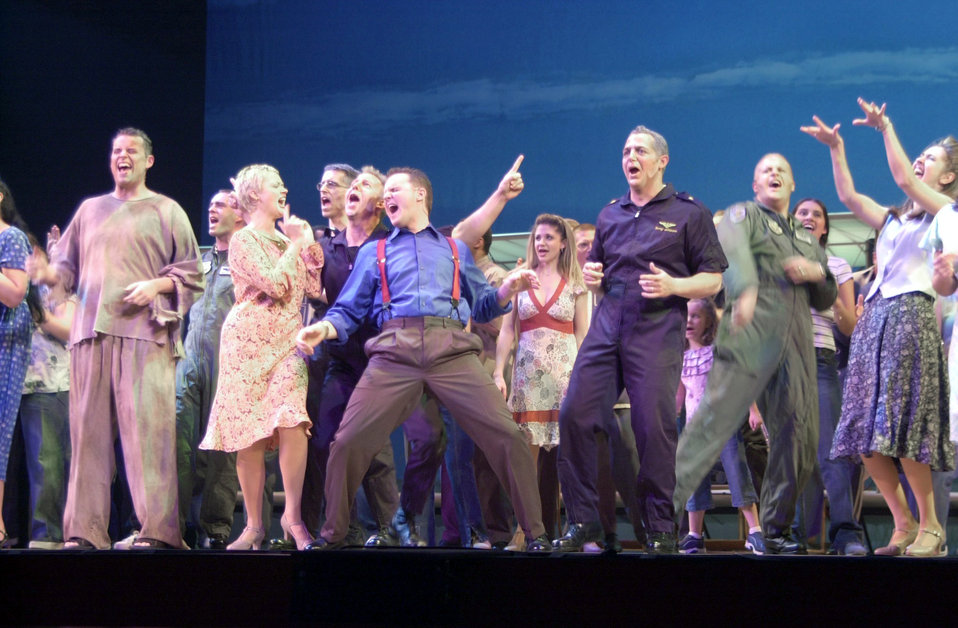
Going Hollywood

HOLLYWOOD, Calif. -- The U.S. Air Force Band from Bolling Air Force Base, D.C., performs its musical